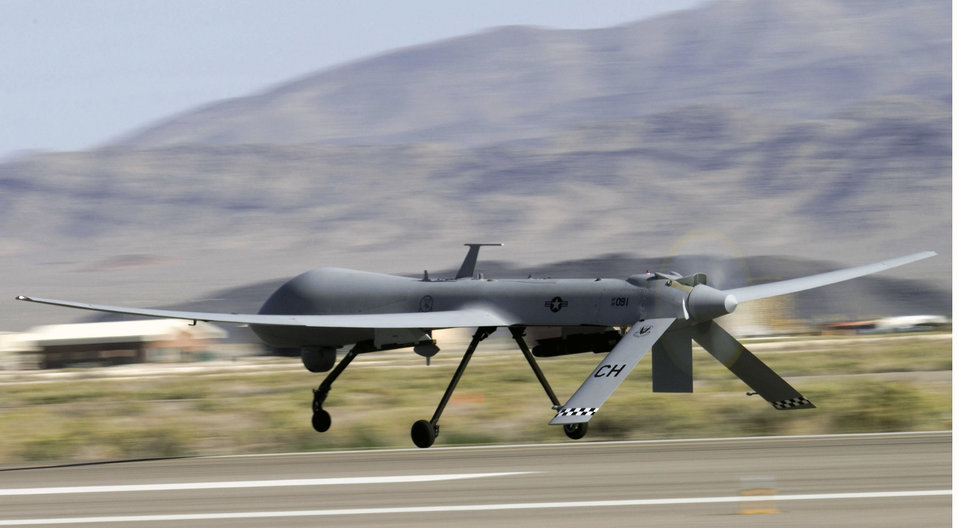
Predator passes 500,000 flight hours

An MQ-1 Predator unmanned aircraft takes off for a training mission at Creech Air Force Base, Nev.